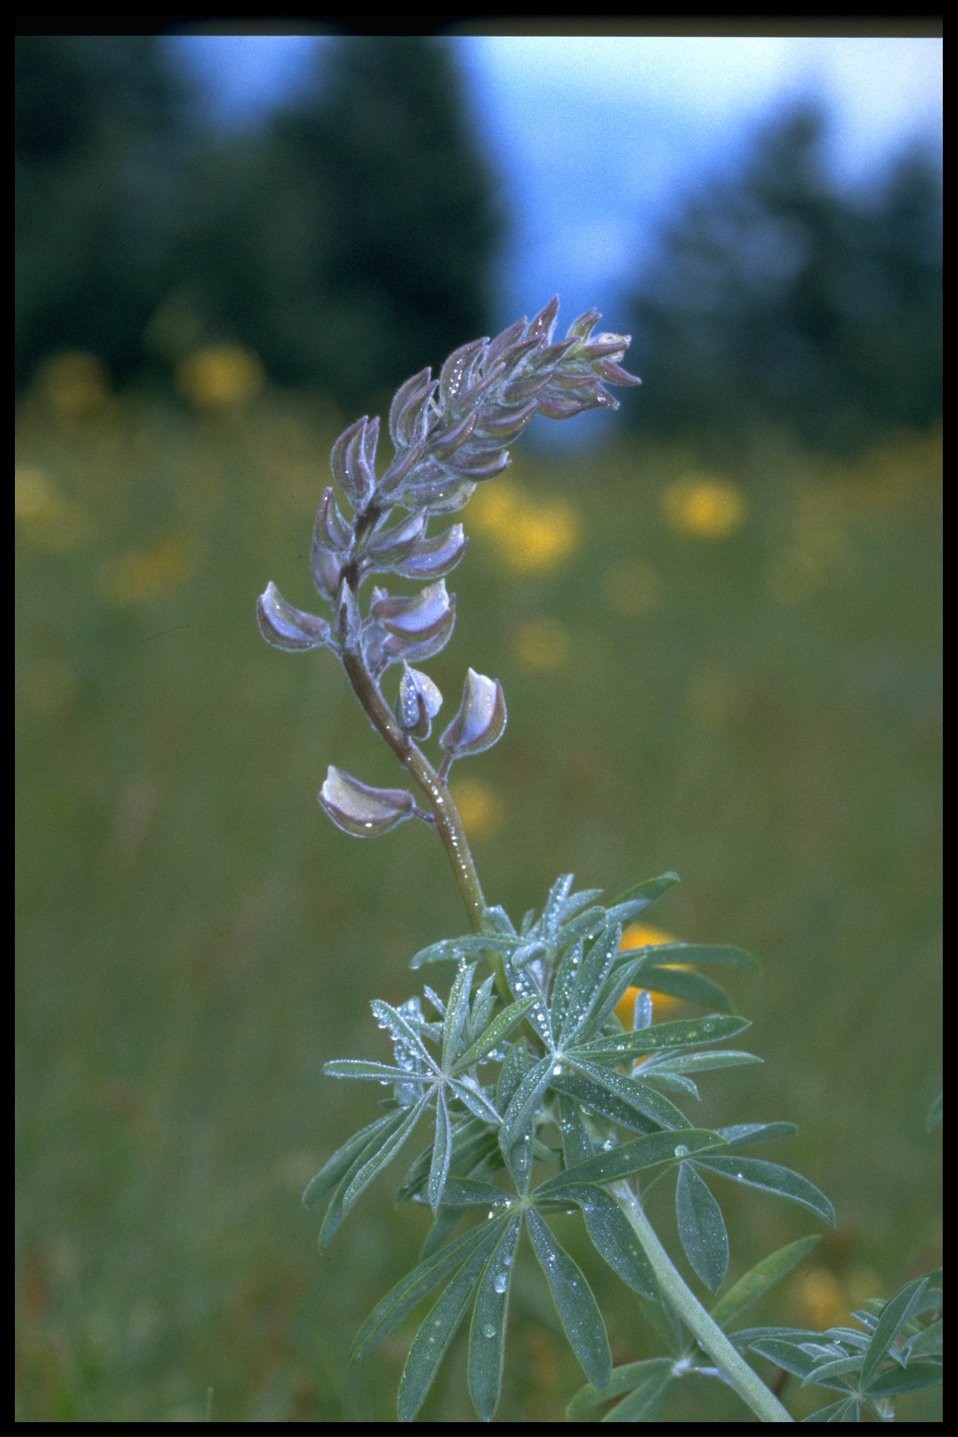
Medium shot of lupine (genus Lupinus).